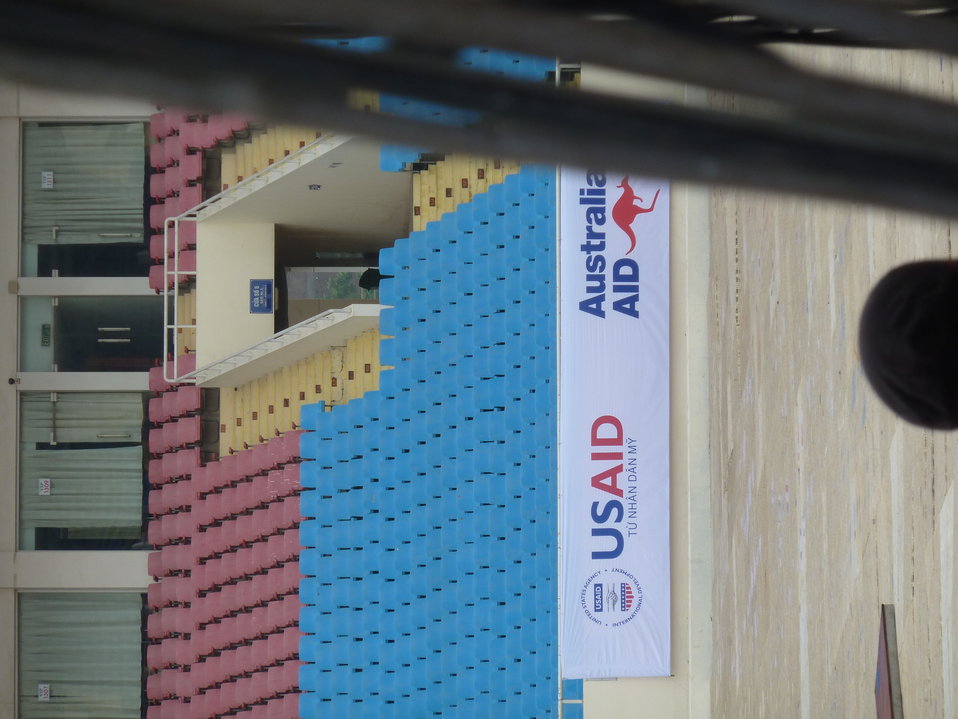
Preparations under way for big MTV EXIT concert in Hanoi on May 26, 2012

Co-sponsored by USAID.